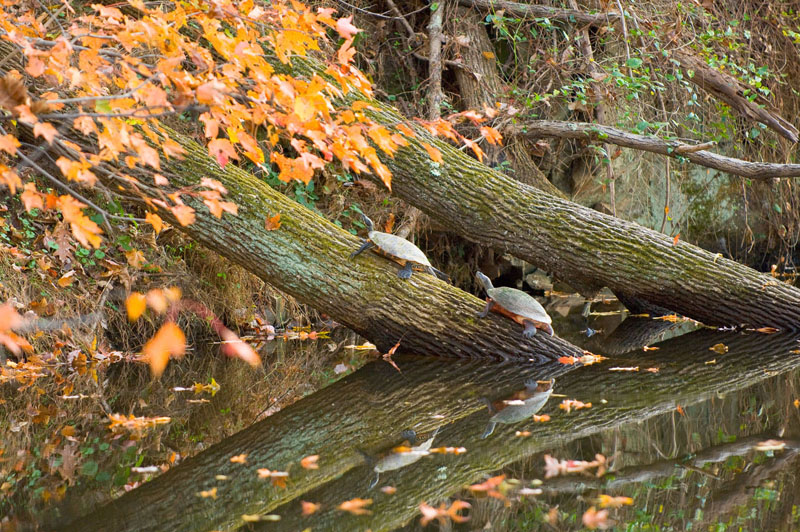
CandO Canal, Washington, DC. 2007 Along the Potomac River, Chesapeake Bay watershed.